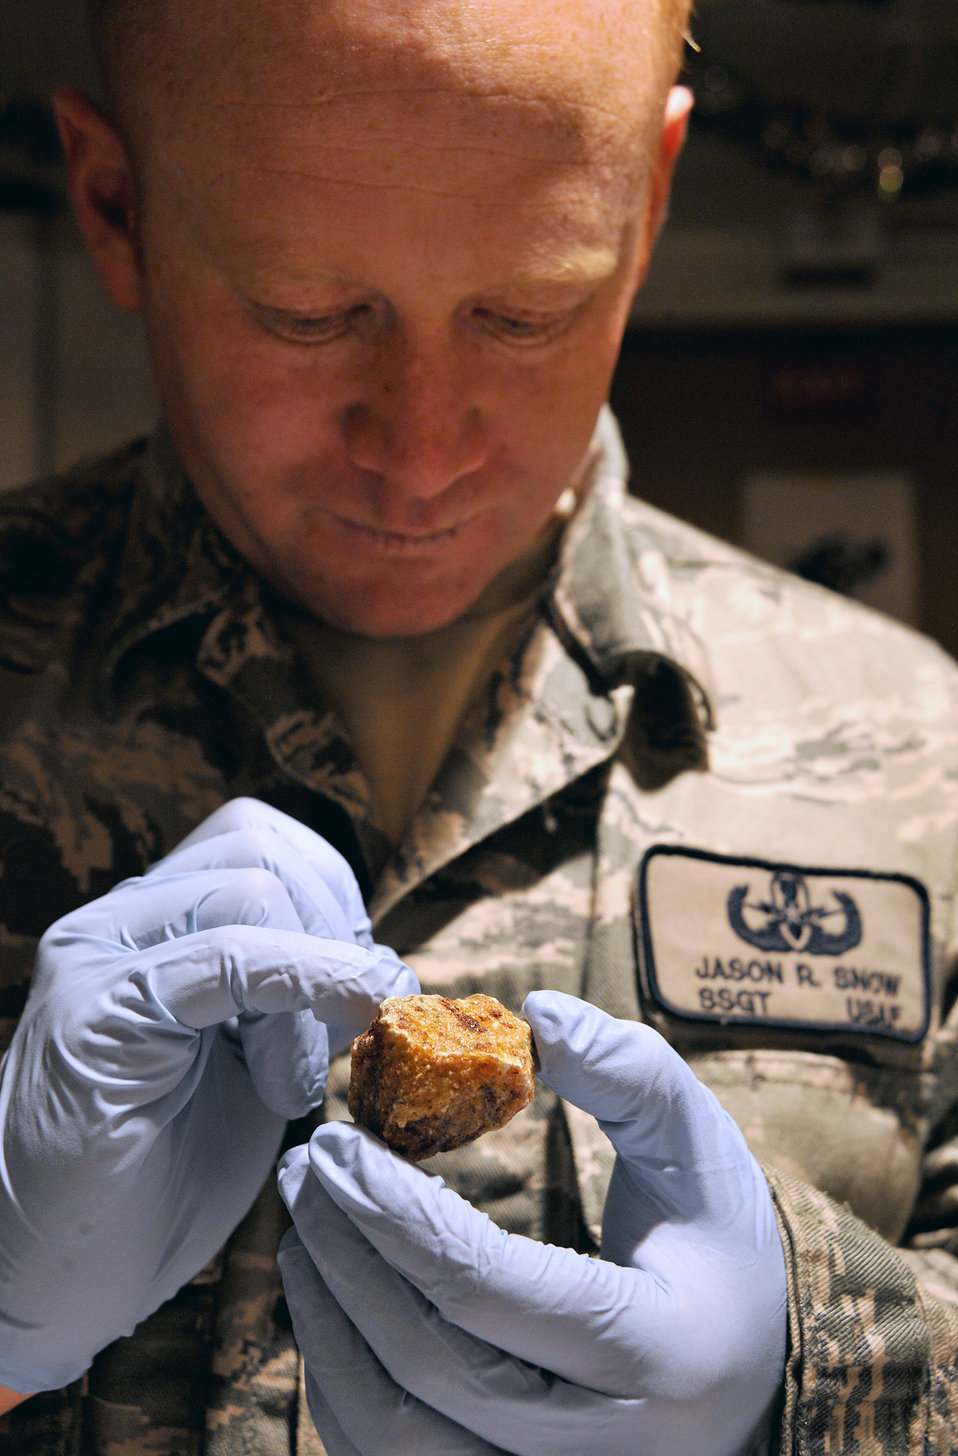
Joint task force Airmen

Staff Sgt. Jason Snow looks closely at an unknown substance Dec. 26, 2010, on Camp Victory, Iraq. Sergeant Snow is the NCO in charge of the Combined Explosive Exploitation Cell triage laboratory for Combined Joint Task Force Troy. CJTF Troy is dedicated to countering IEDs and saving lives of Iraqi and joint forces conducting Operation New Dawn, and one key responsibility of CJTF Troy and CEXC members is neutralizing the threat of improvised explosive devices through collection and exploitation of IED evidence and related intelligence.